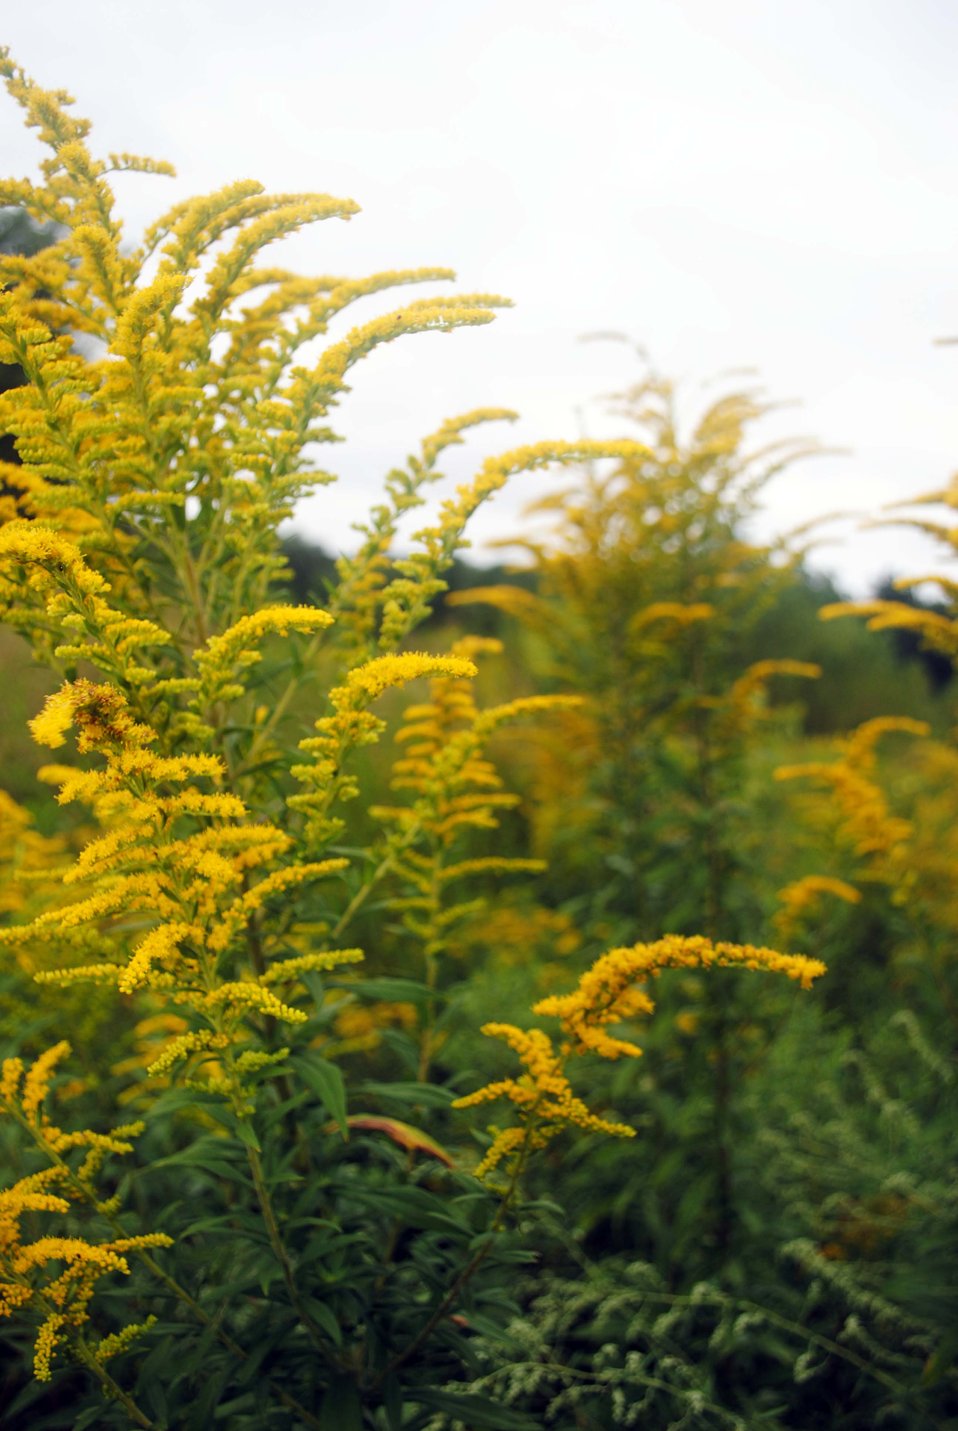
Goldenrod plants at the Fort River Division of the Silvio O. Conte National Wildlife Refuge, Hadley, MA.